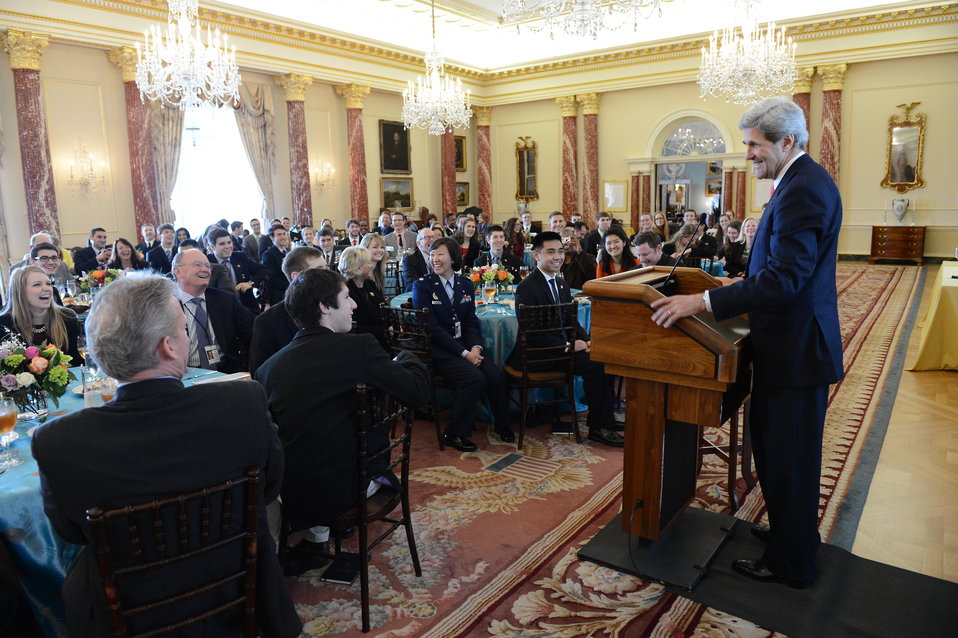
Secretary Kerry Addresses Senate Youth Program Participants

U.S. Secretary of State John Kerry addresses Senate Youth Program participants at the U.S. Department of State in Washington, D.C., on March 12, 2013.